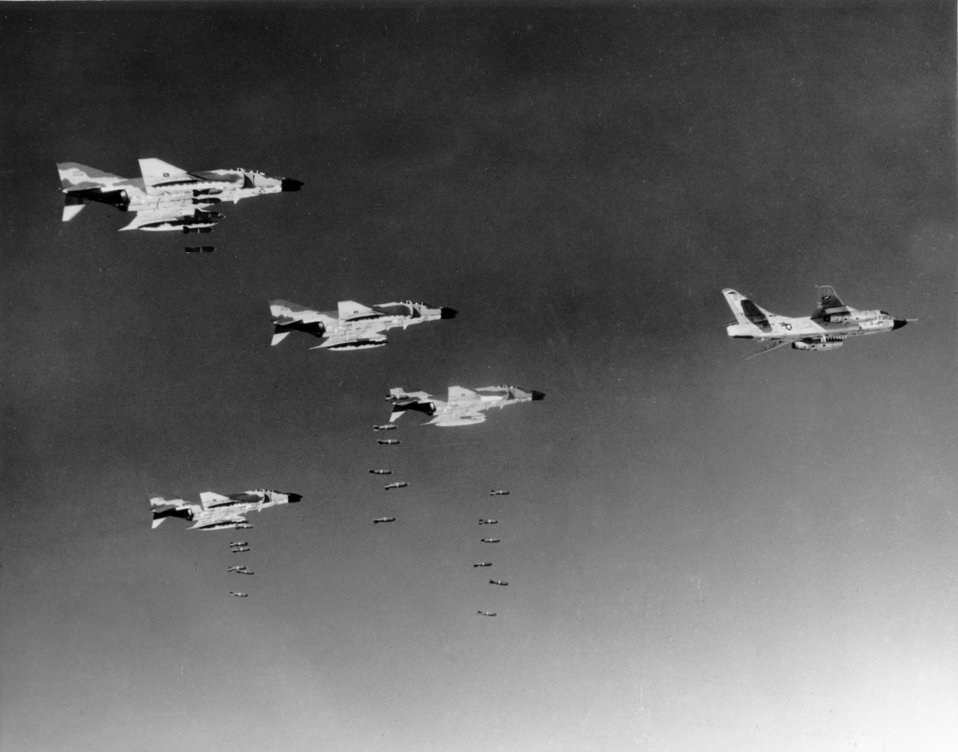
Bombing Communist military target

1960's -- Led by an RB-66 Destroyer, pilots flying Air Force F-4C Phantoms drop bombs on a Communist military target in North Vietnam. Using radar equipment to pinpoint their targets, the high flying aircraft were not hampered by clouds or adverse weather. Numerous missions of this type were flown when inclement weather obscured targets in North Vietnam during July. August 1966 Air Force Photo